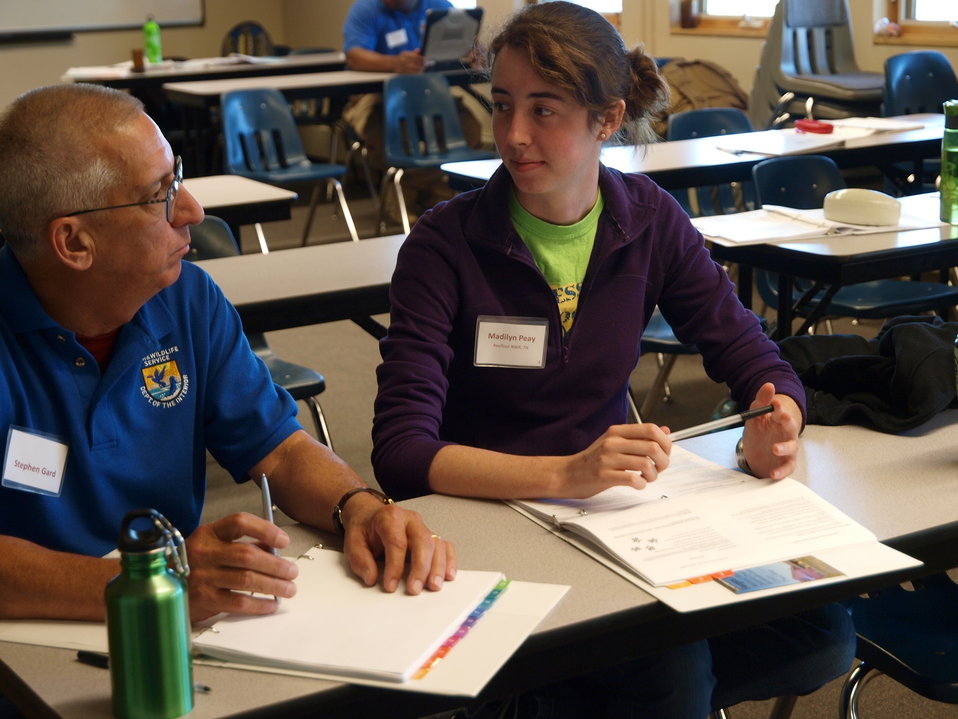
CDIP 2012 Fergus Falls

Stephen and Madilyn